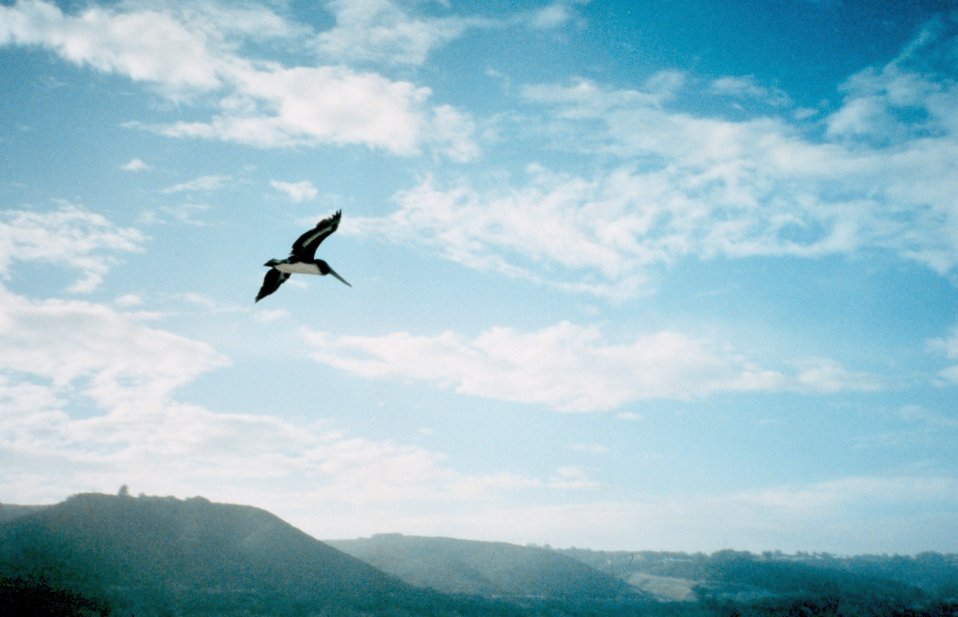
Pelican in flight